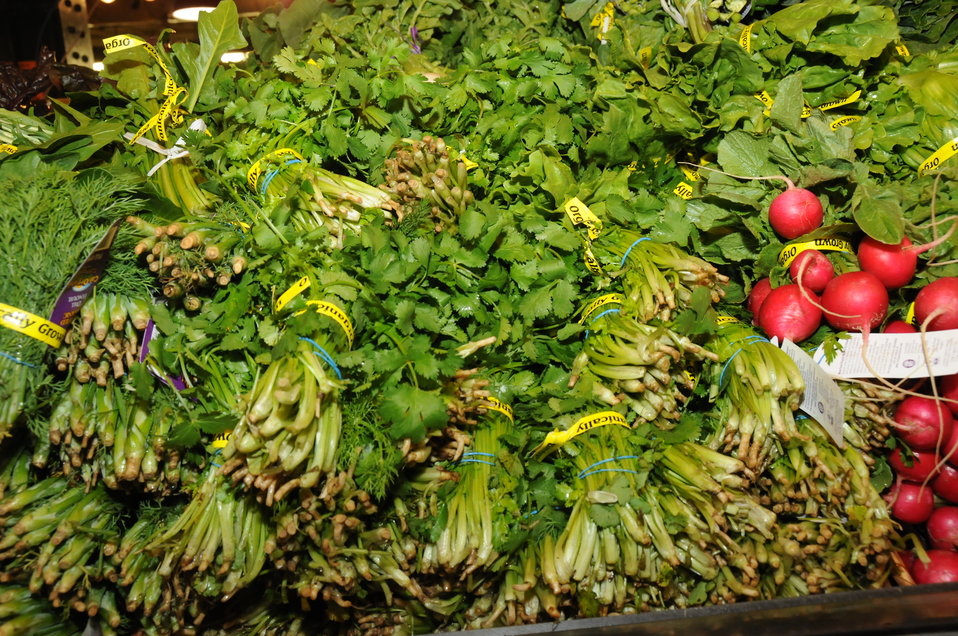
The Reading Terminal Market offers produce fresh from the field to the people of Philadelphia, PA on April 3, 2009. There are Amish specialties, fruits, vegetables, meats, seafood, and poultry. Reading Terminal Market opened for business in 1892 with approximately 78,000 square feet and almost 800 spaces for vendors. The Market was revitalized in the 1990’s and today is still the gastronomic bazaar that its original planners had envisioned. Many of the historic Market stands survived the reconstruction and are once again filled with local produce, fresh eggs, milk, meats, poultry, seafood, handmade crafts, jewelry, and clothing. The Market is home to more than 80 merchants, two of whom are descendants of the original stand holders from a century before.